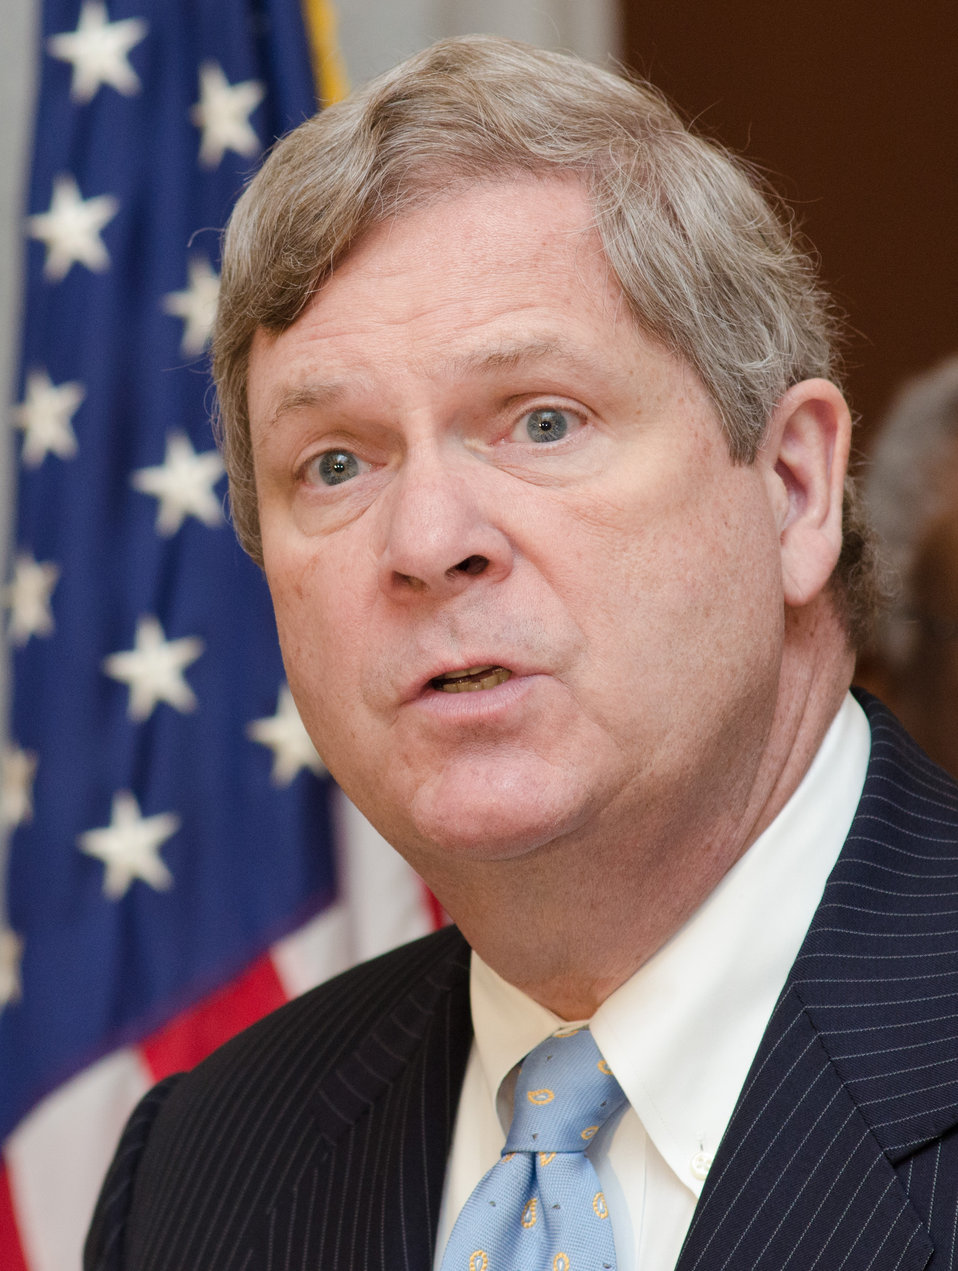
Agriculture Secretary Tom Vilsack speaking at a press conference in the South Caroline State Capitol in Columbia, SC after the kick off of the Strike Force Initiative For Rural Growth and Opportunity at Voorhees College in Denmark, SC, on Tuesday, Mar. 26, 2013.